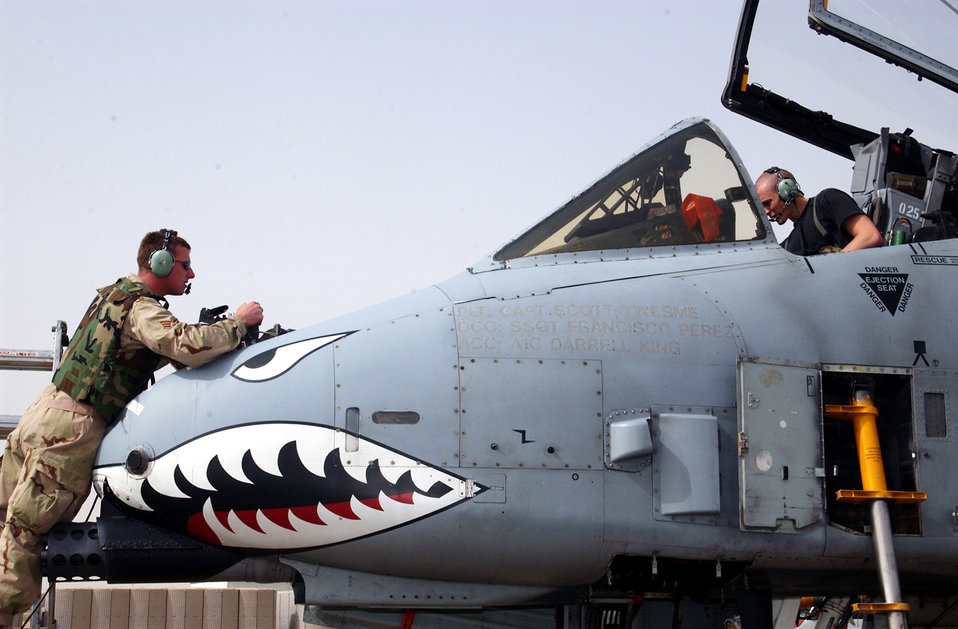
Thunderbolt check

OPERATION IRAQI FREEDOM -- Senior Airman Jay Labrum, 124th Maintenance Squadron, Idaho Air National Guard, performs an operational check on an inflight refueling receptacle on the nose of an A-10 Thunderbolt II at a desert air base in the Arabian Gulf Region. Airman 1st Class Kyle Austin, 43rd Maintenance Squadron from Pope Air Force Base, N.C., monitors from the cockpit.